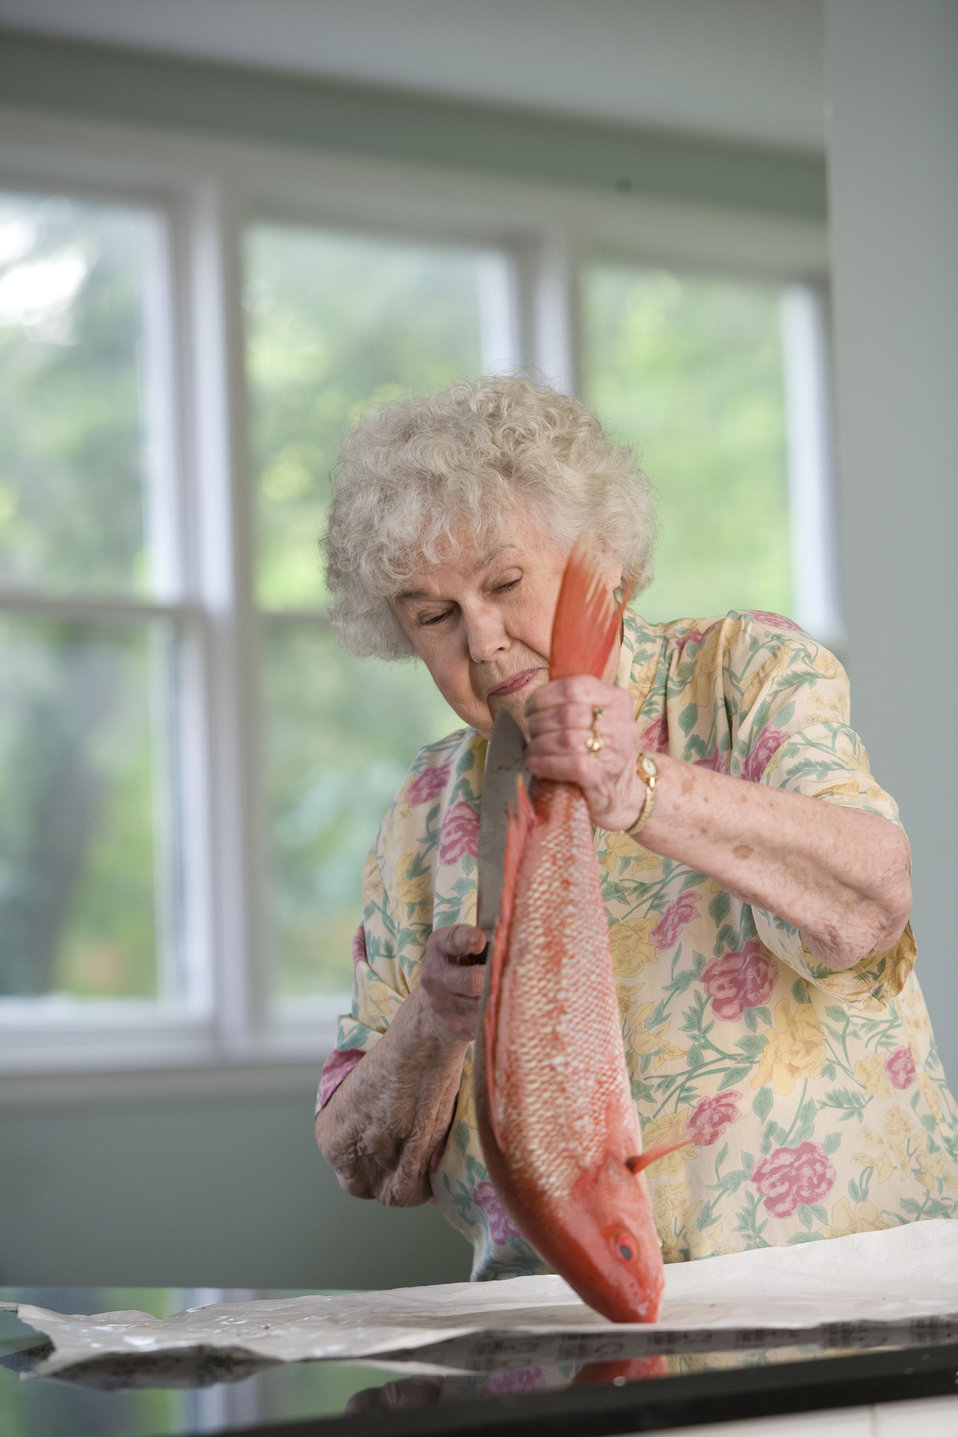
Here, an elderly woman was in the process of preparing a fresh fish on her clean kitchen counter. Carefully using a large knife, the woman was removing the scales beginning at the tail, moving towards the fish's head.